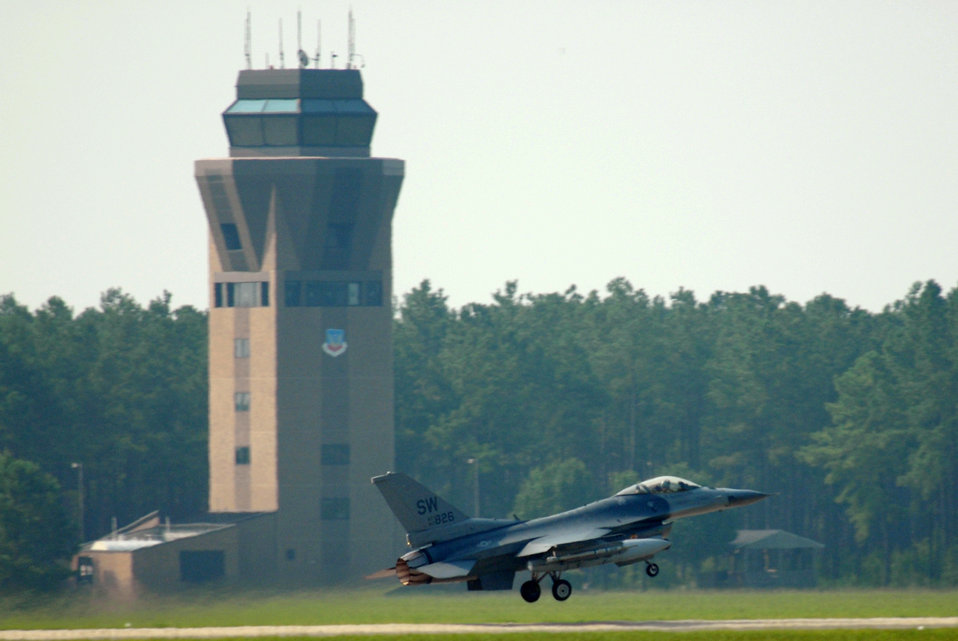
Dynamic Weasel keeps pilots sharp

An F-16 from the 77th Fighter Squadron takes off in support of Operation Dynamic Weasel on Thursday, June 29, at Shaw Air Force Base, S.C. The exercise features various aircraft imitating combat operations in Southwest Asia.